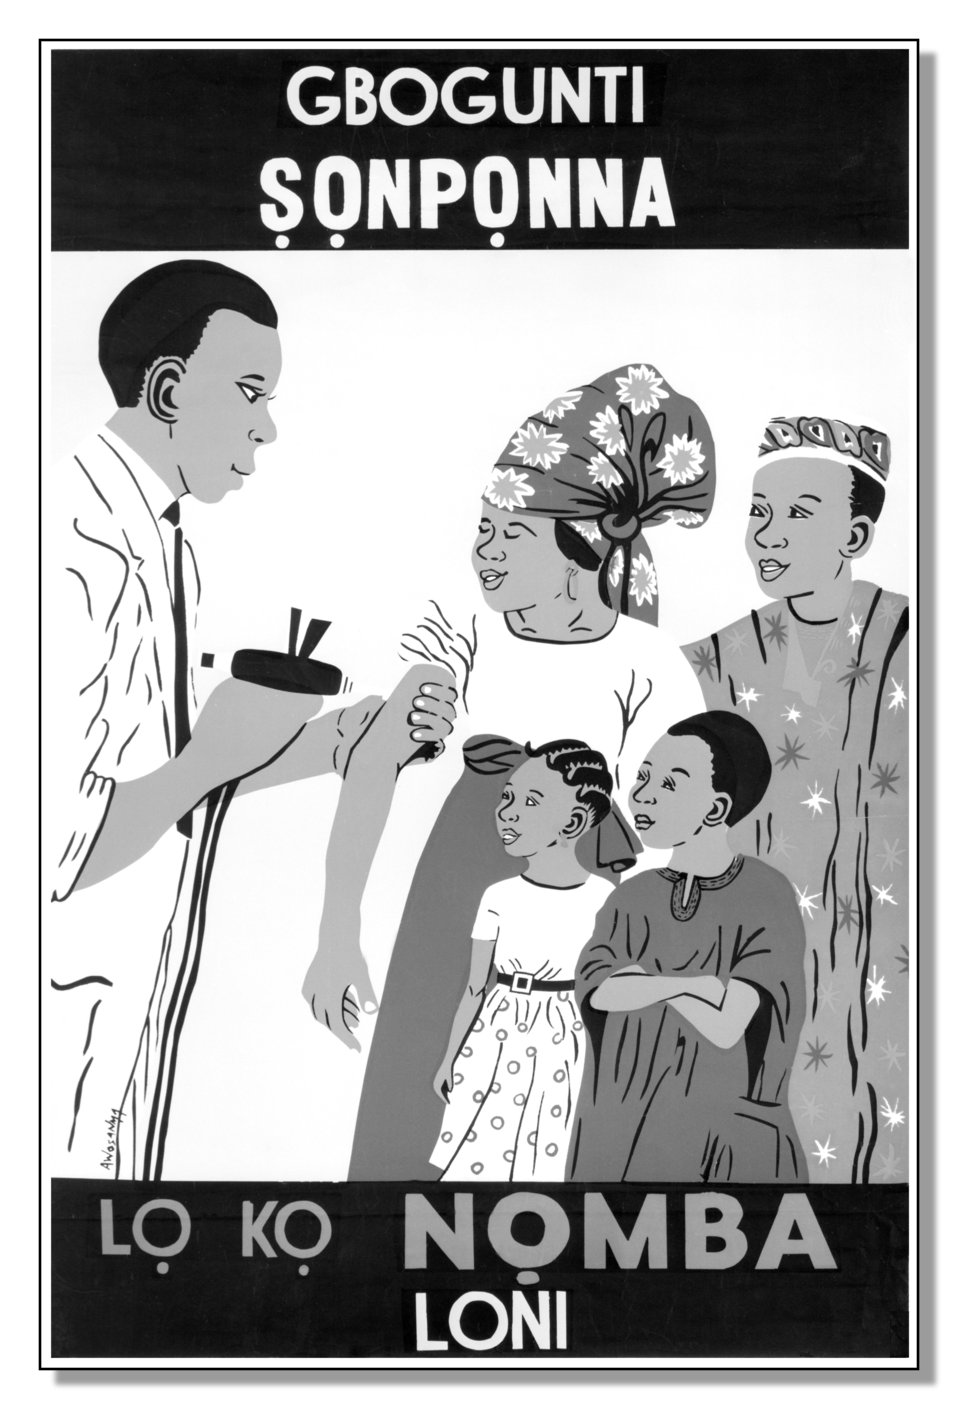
This poster was created prior to 1979 promoting the importance of Smallpox and Measles vaccination in foreign lands.